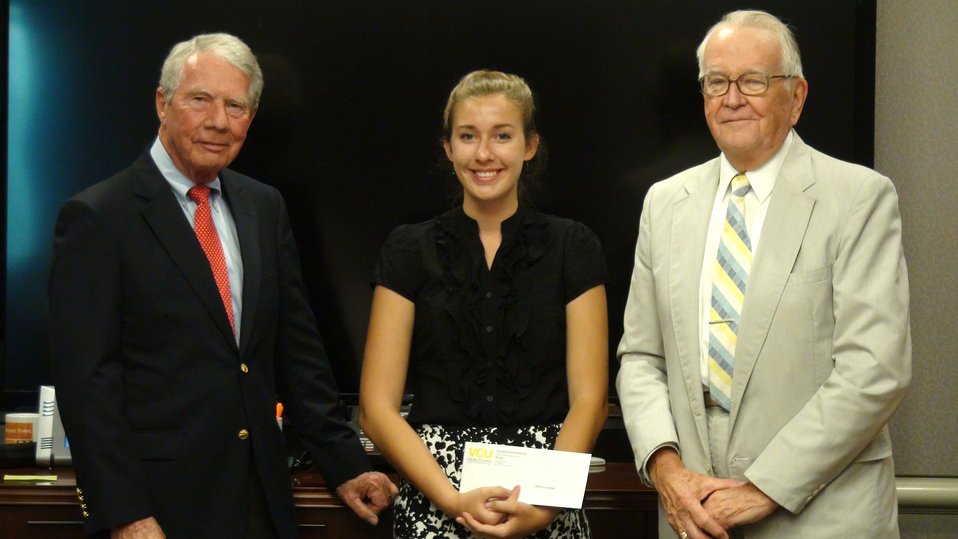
130813-NIDA-Alaina Sonksen

Friends of NIDA’s Charles O’Keefe (L) and Bill Dewey (R,) gives award to Alaina Nicole Sonksen, (3rd Place Winner.)